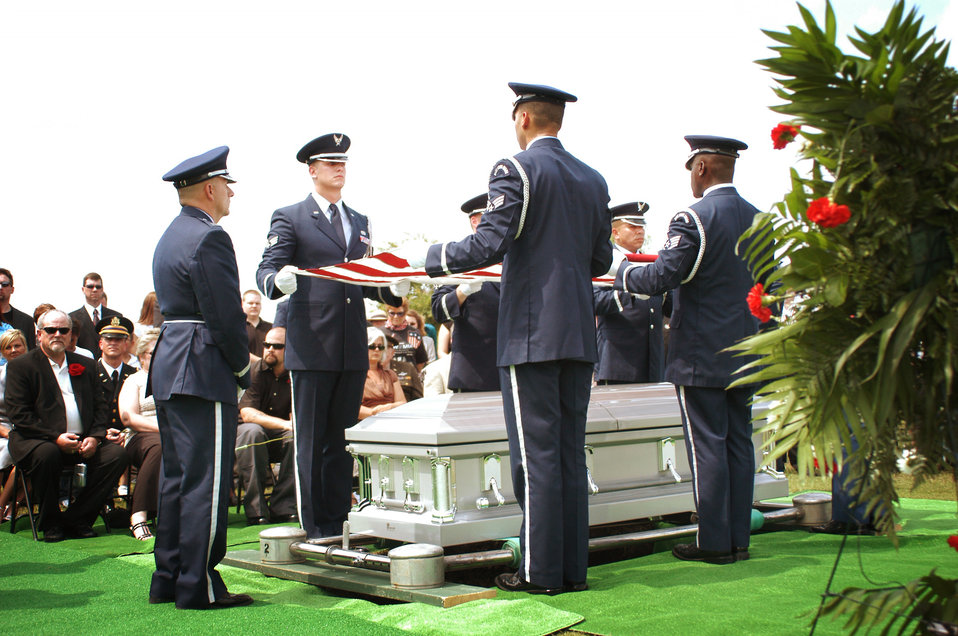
Going home

DALLAS -- Honor guard Airmen prepare to fold the flag previously draped over the remains of Capt. Troy Cope during a repatriation ceremony at the Dallas-Fort Worth National Cemetery here May 31. Captain Cope's remains were recovered in China after his F-86 Sabre was shot down in 1952 during the Korean War.